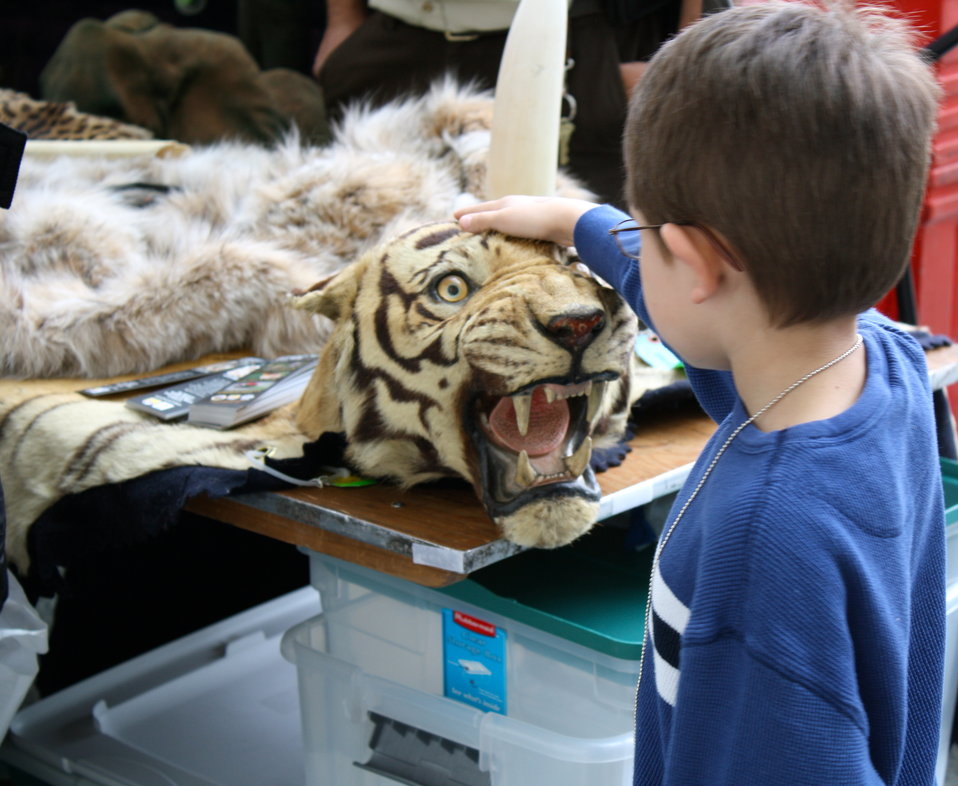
Petting Tiger, Hidden Dragon